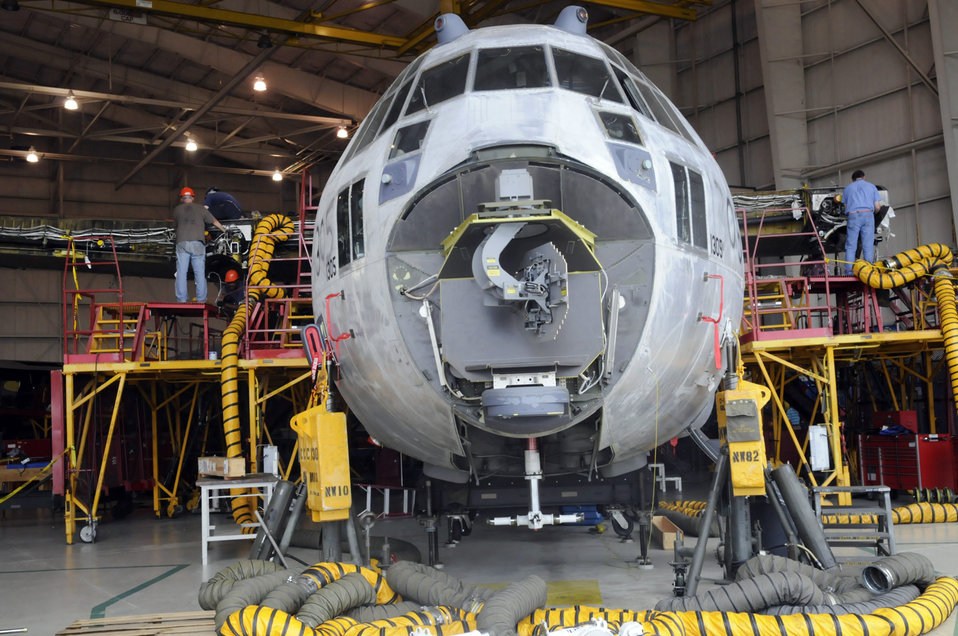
New process to drastically change programmed maintenance

The first C-130 Hercules to undergo high-velocity maintenance is scheduled to arrive July 31 at Robins Air Force Base, Ga.